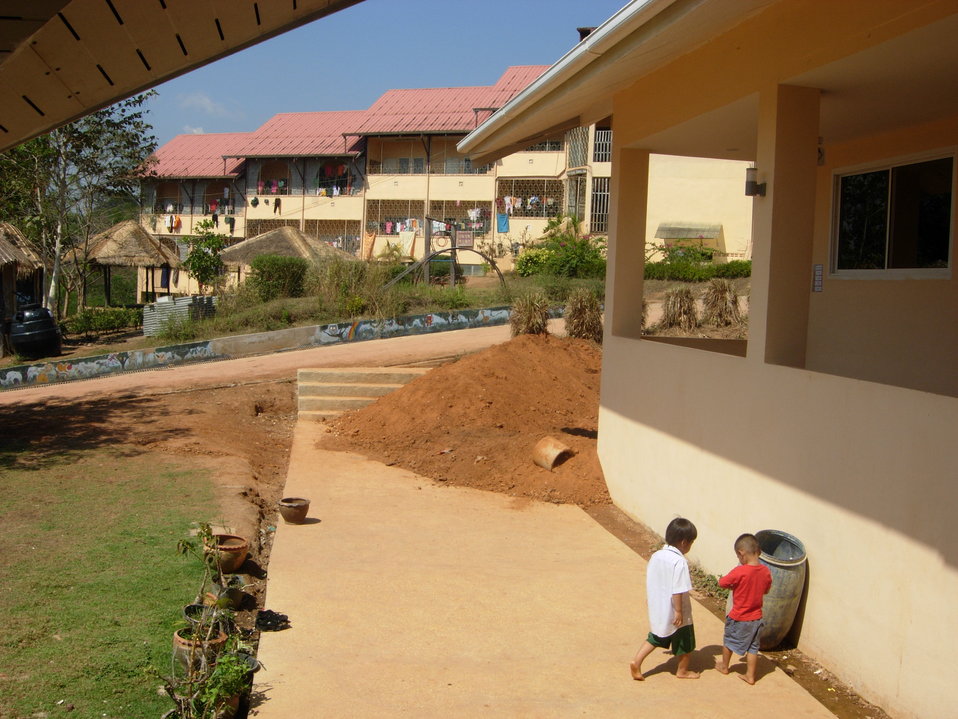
This is the AMURTEL Children's and Mother's Home Baan Unrak ('House of Joy') in Sangkhlaburi (North-West of Kanchanaburi Province of Thayland, close to Myanmar).